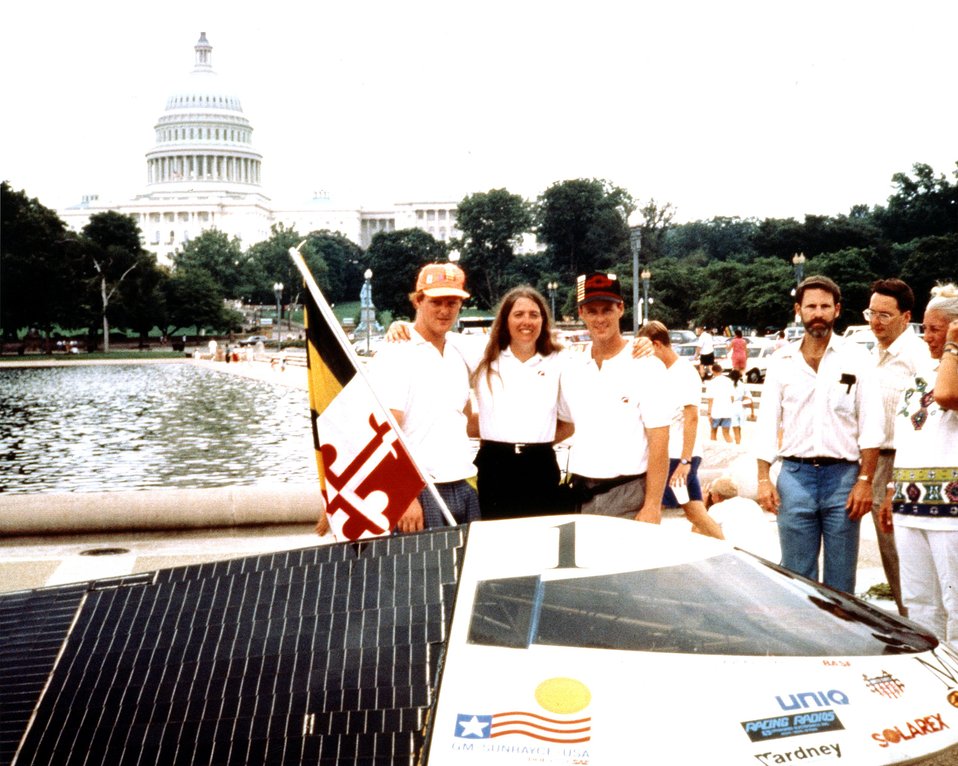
UNIVERSITY OF MARYLAND TEAM AT THE POST-RACE VICTORY CELEBRATION IN WASHINGTON, D.C.